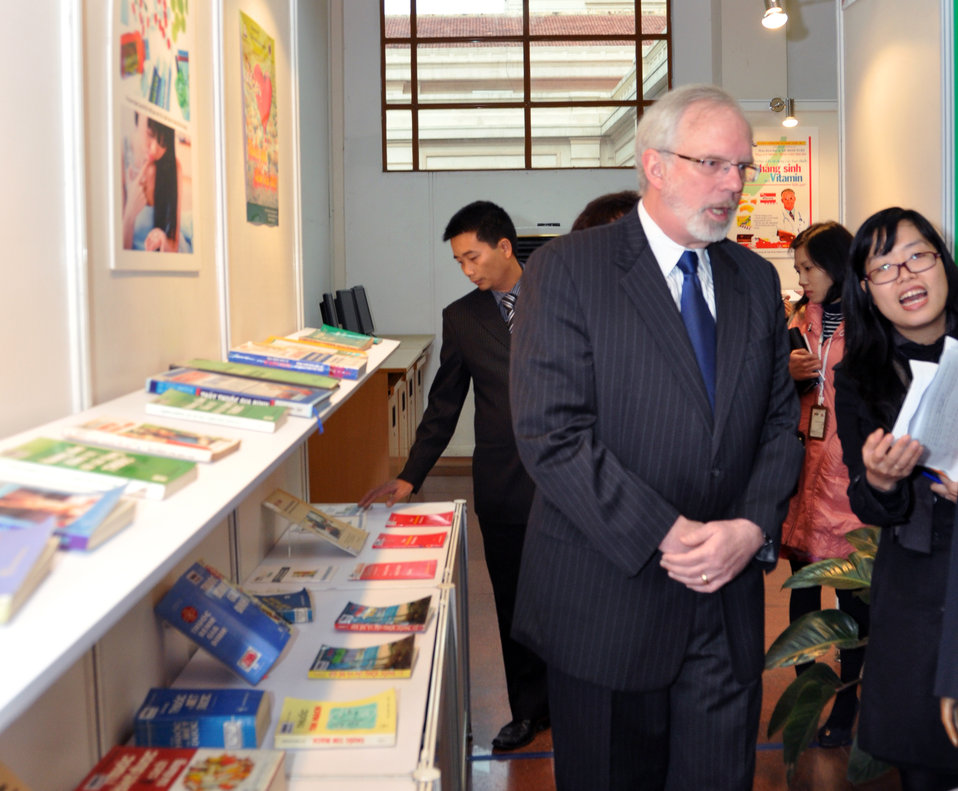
U.S. Ambassador David Shear opens safe medicine exhibition in Hanoi

Safe Medicine Exhibition